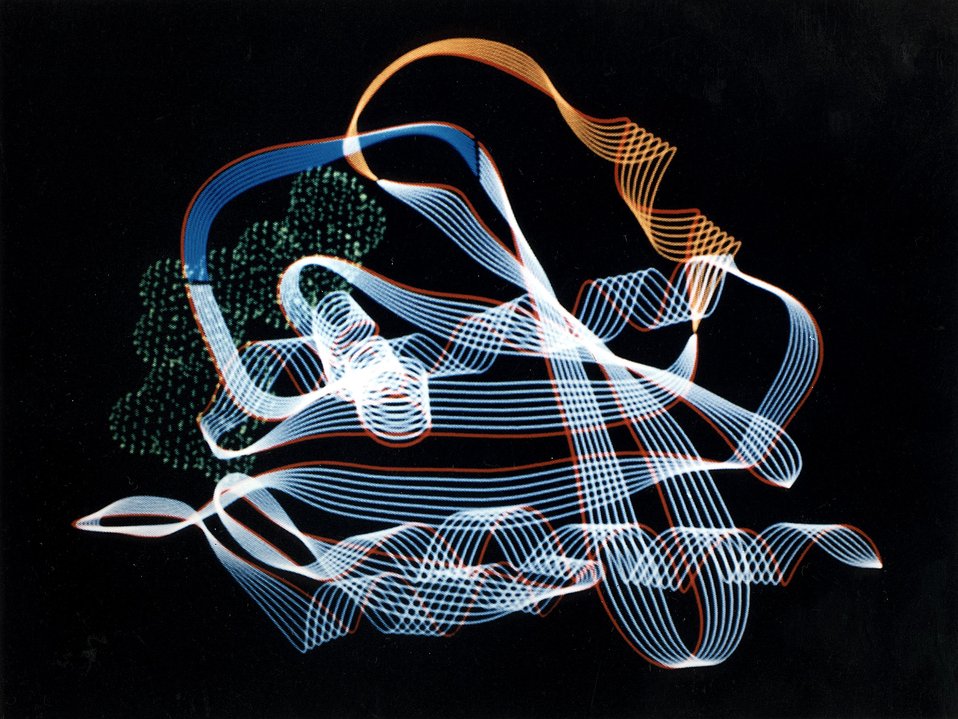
Normal Protein of Oncoprotein> This computer-generated image shows the structural backbone of the normal ras protein, as determined by x-ray diffraction studies.